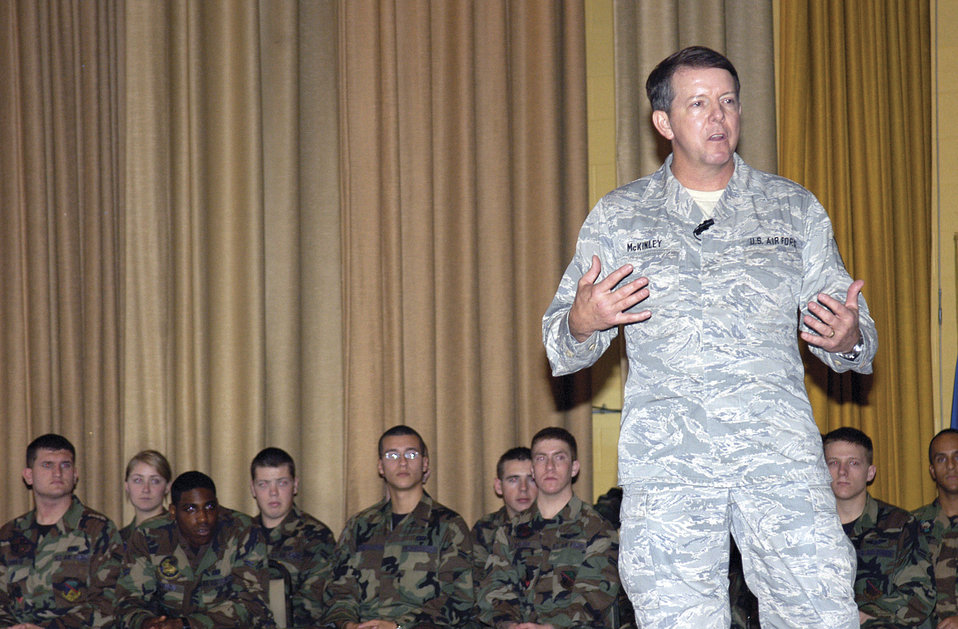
ABU wear policy effective immediately

Chief Master Sgt. of the Air Force Rodney J. McKinley answers questions during an enlisted call with Airmen Dec. 13 at Tinker Air Force Base, Okla. Chief McKinley is wearing the new Airman Battle Uniform and Air Force officials released the wear policy for the uniform Feb. 7.